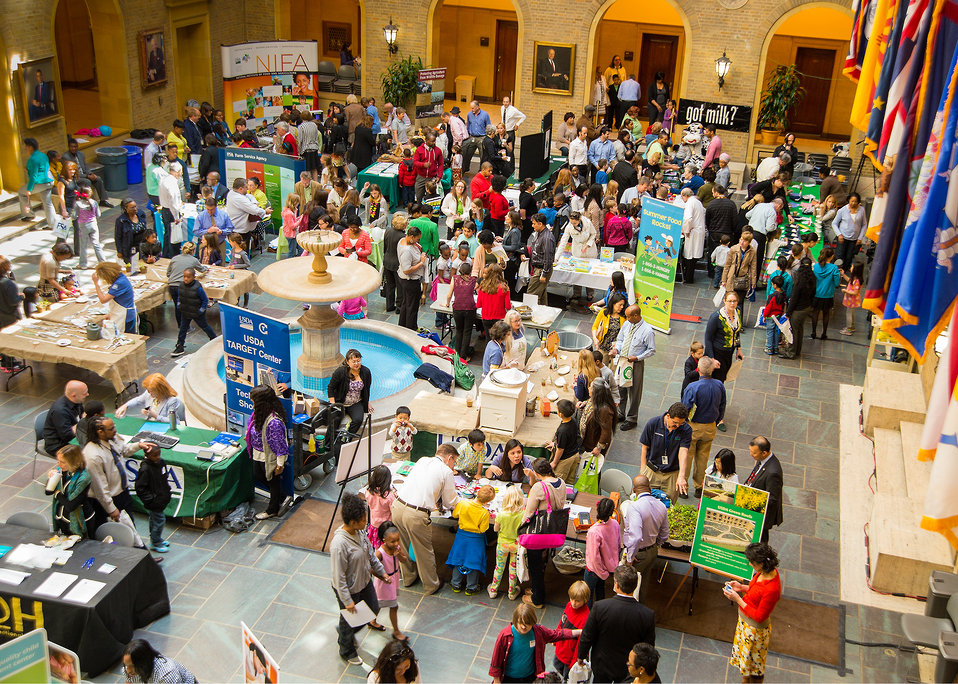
The U.S. Department of Agriculture (USDA) held its annual “Bring Your Daughters and Sons to Work on Thursday, Apr. 24, 2014 in Washington, D.C. The event offers employees the opportunity to bring their children to work to experience what they do in their profession and offer insight into other careers at the Department of Agriculture.